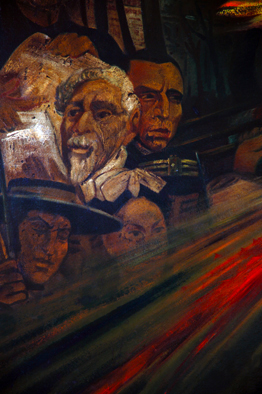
Detail of 'Voz del Pueblo, Voz de Dios' painting, by José Suárez Olvera